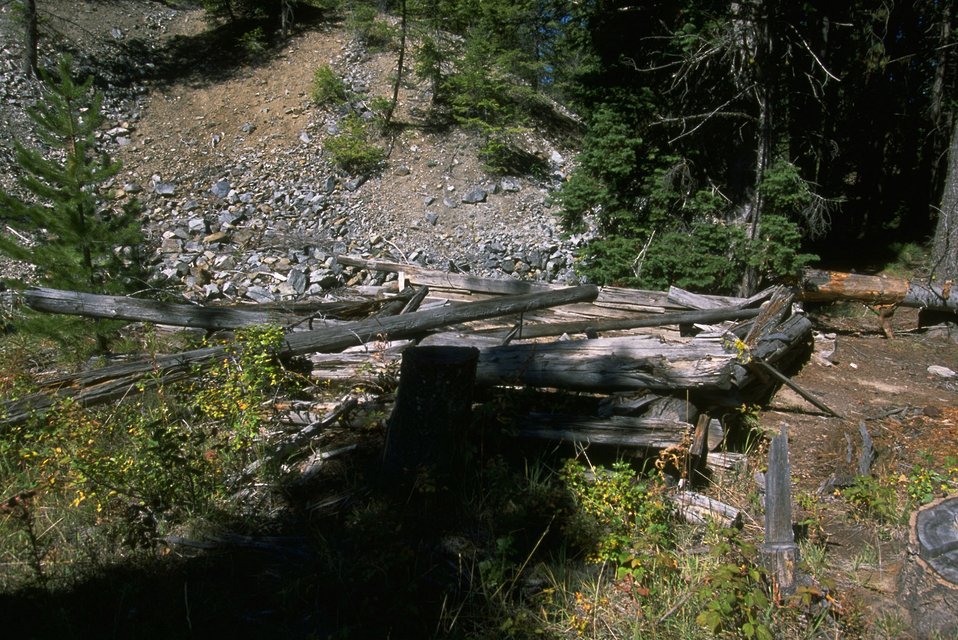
Dilapidated cabing in Coloma Ghost Town